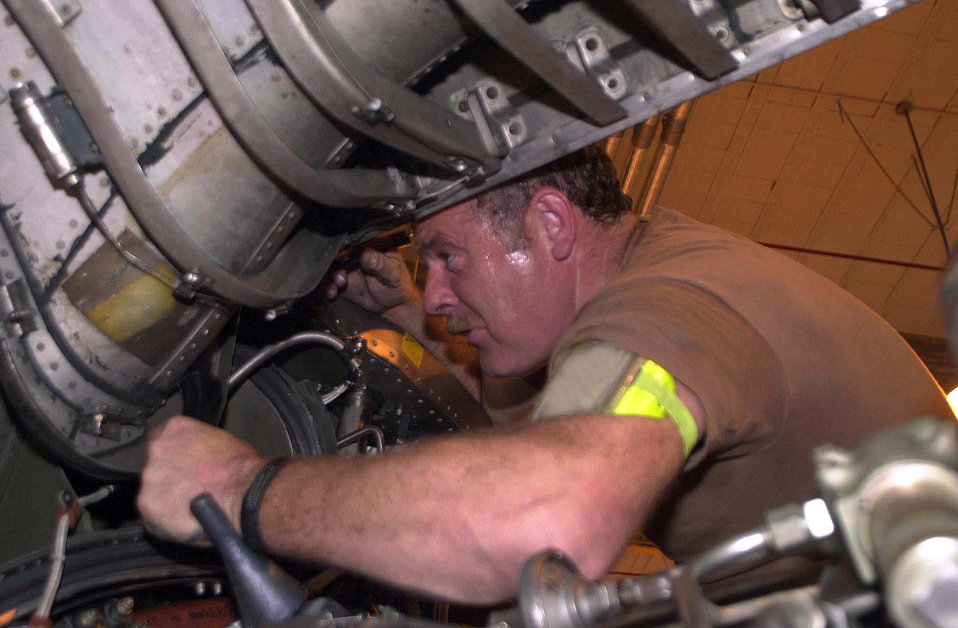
Starlifter maintenance

NAVAL AIR STATION SIGONELLA, Italy -- Master Sgt. Gregory King from the 445th Aircraft Generation Squadron at Wright-Patterson Air Force Base, Ohio, removes the engine covering doors on a C-141B Starlifter before swapping engines.